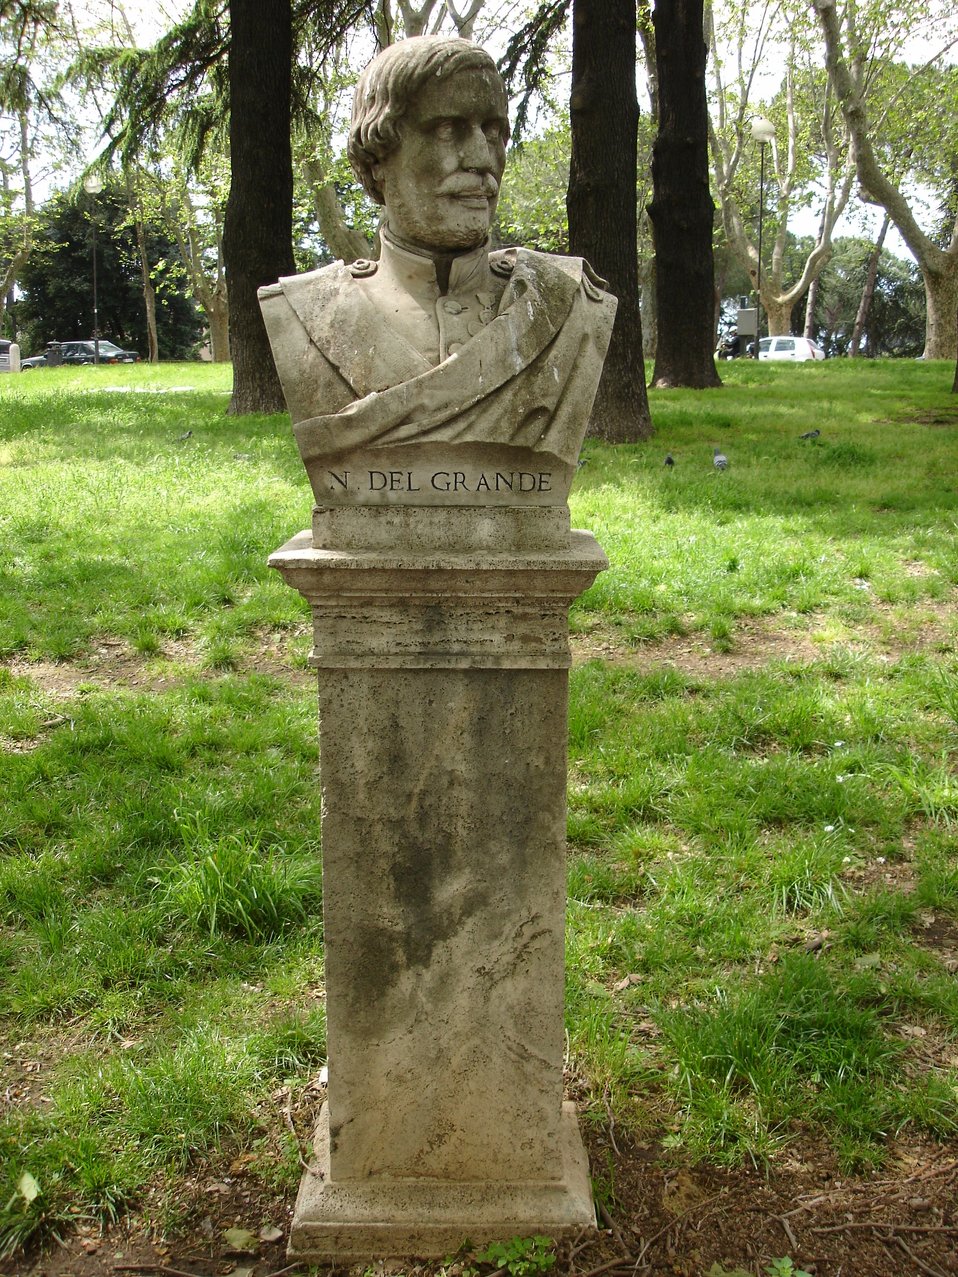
Italiano: N. Del Grande. Foto fatta da me F. Fullone al Gianicolo. Original uploader was Fullo88 at it.wikipedia